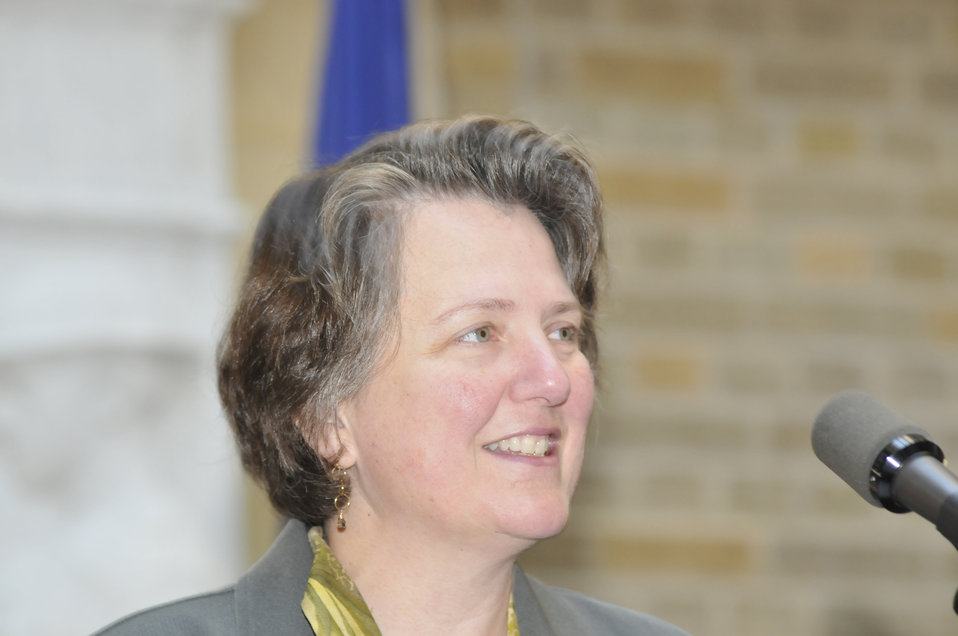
Agriculture Deputy Secretary Kathleen Merrigan makes remarks at the opening ceremonies for the 2010 Combined Federal Campaign held on the Patio of the U.S. Department of Agriculture in Washington, DC, on Tuesday, October 12, 2010. USDA Photo 10di1521-0025 by Bob Nichols.